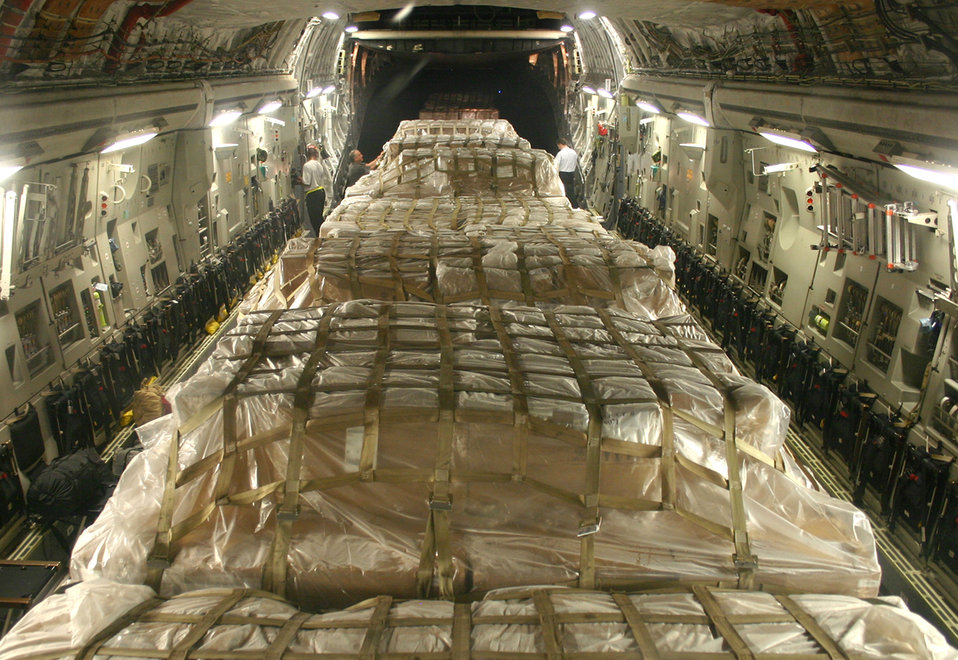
Airmen deliver 30,000 H1N1 prevention kits to South America

Pallets of personal protective kits sit ready for delivery aboard a C-17 Globemaster III from Charleston Air Force Base, S.C., May 8. The kits are part of a U.S. Agency for International Development shipment to Haiti, Guatemala, Honduras, El Salvador, Nicaragua and Belize to help these nations prepare for a potential outbreak of the H1N1 influenza virus.